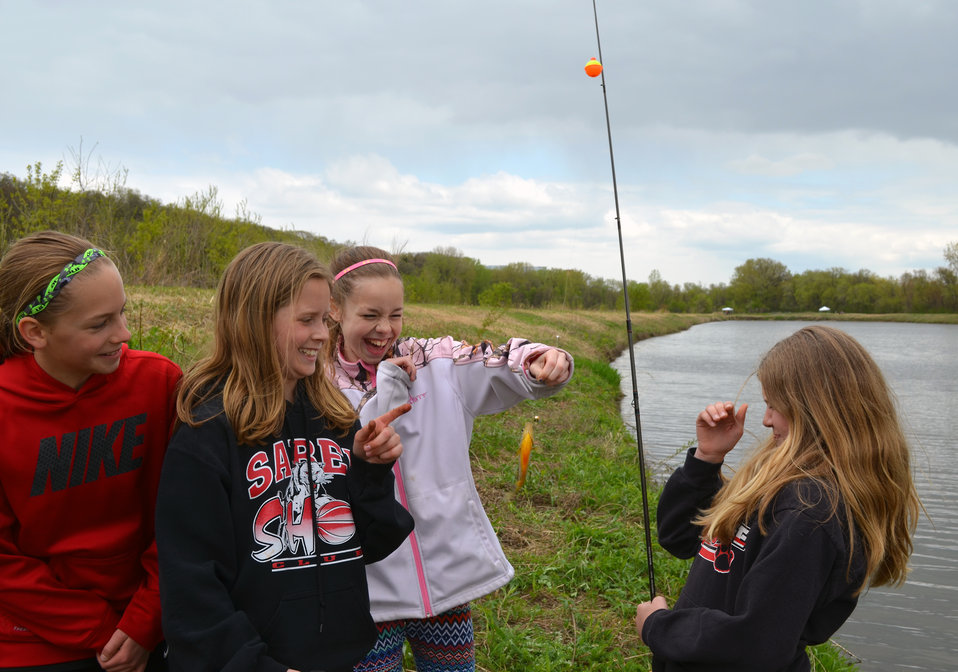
Fishing is fun